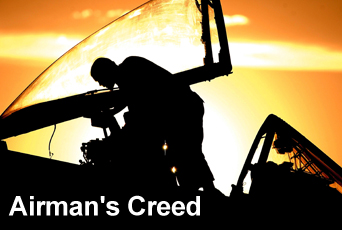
Airman's Creed

The Air Force chief of staff introduced the new